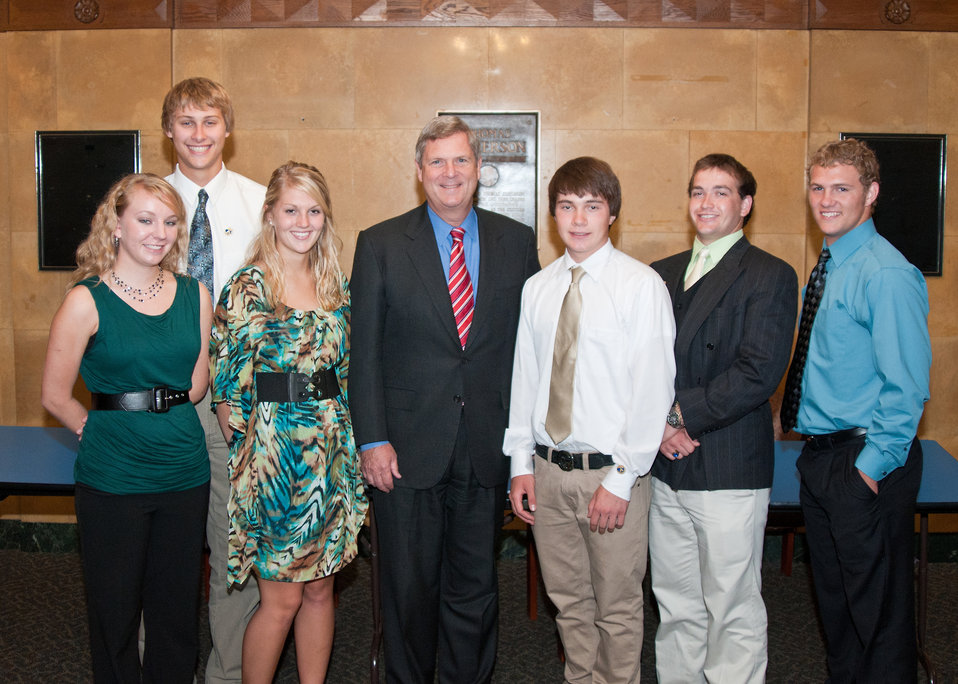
(L to R) National Farmer’s Union Senior Youth Advisor Council members Rochelle Bitz, Mason Farber, Emily Albrecht, Jacob Hanson-Flores, Ramon Portuese and Joe Rosenbrock pose with Agriculture Secretary Tom Vilsack during the National Farmer’s Union during their annual Fall Legislative Fly-In at the U.S. Department of Agriculture in Washington, D. C. on Monday, Sept.12, 2011.